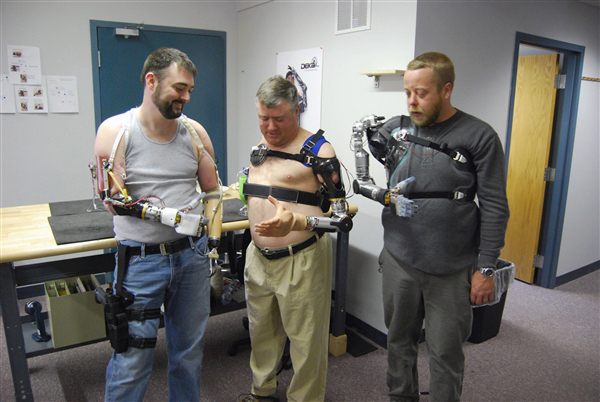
High-tech hands

Users wear and control, without surgery, an advanced prosthetic arm developed under the Defense Advanced Research Projects Agency's Revolutionizing Prosthetics program in 2007.